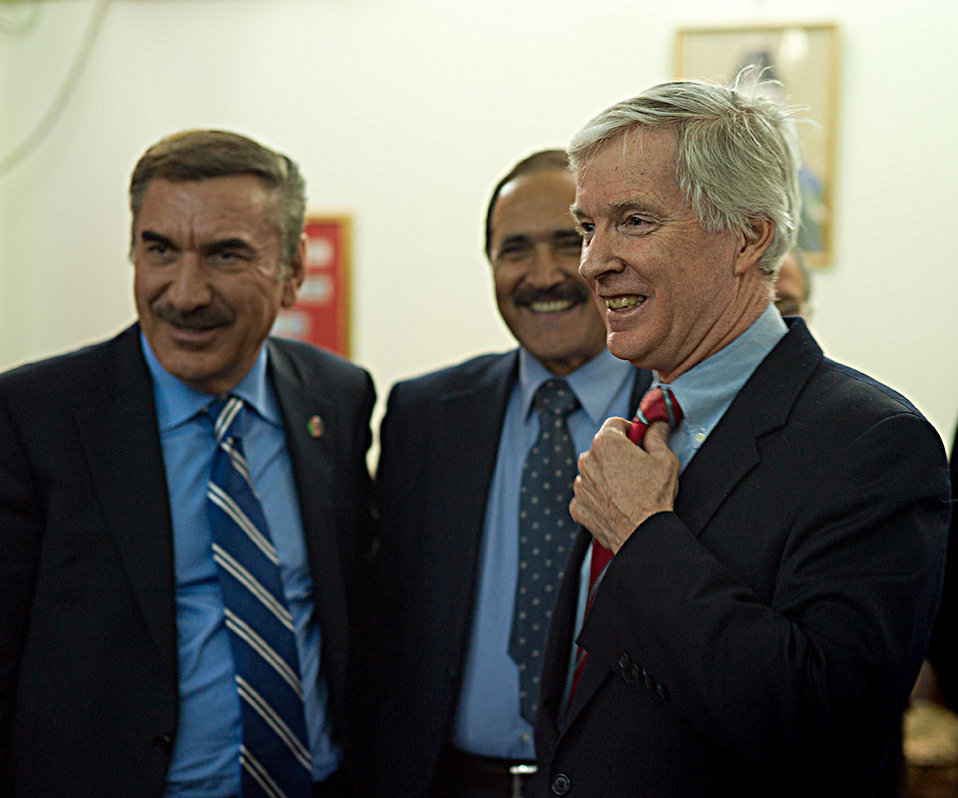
Ambassador Crocker 2